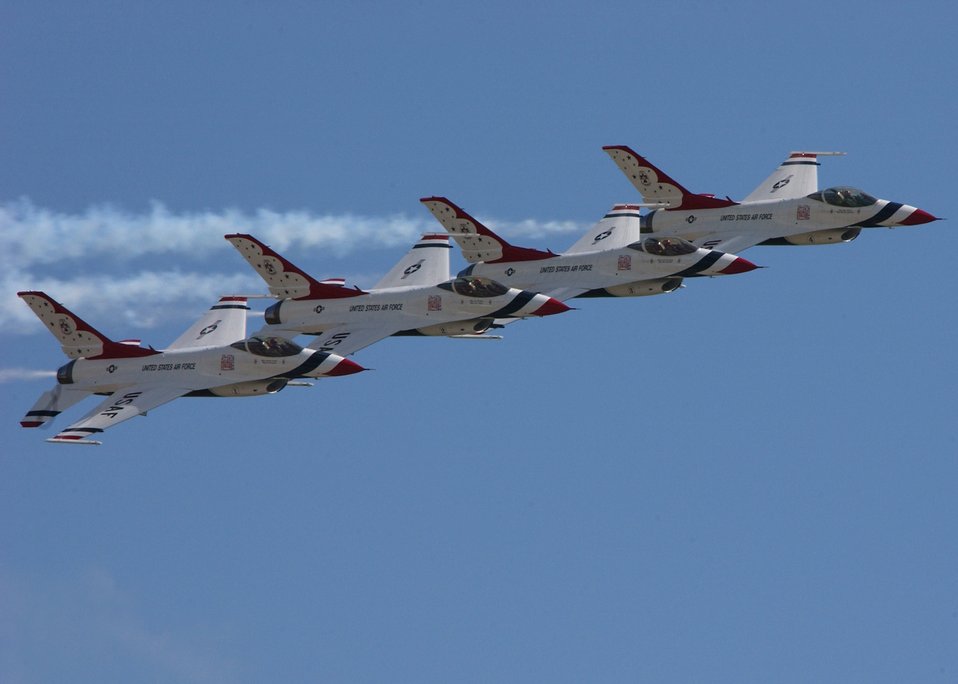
Making the pass

OVER MACDILL AIR FORCE BASE, Fla. -- The U.S. Air Force Thunderbirds perform an echelon pass here April 7. While performing the pass the F-16 Fighting Falcons fly between 18 and 24 inches apart at an average of 400 mph.